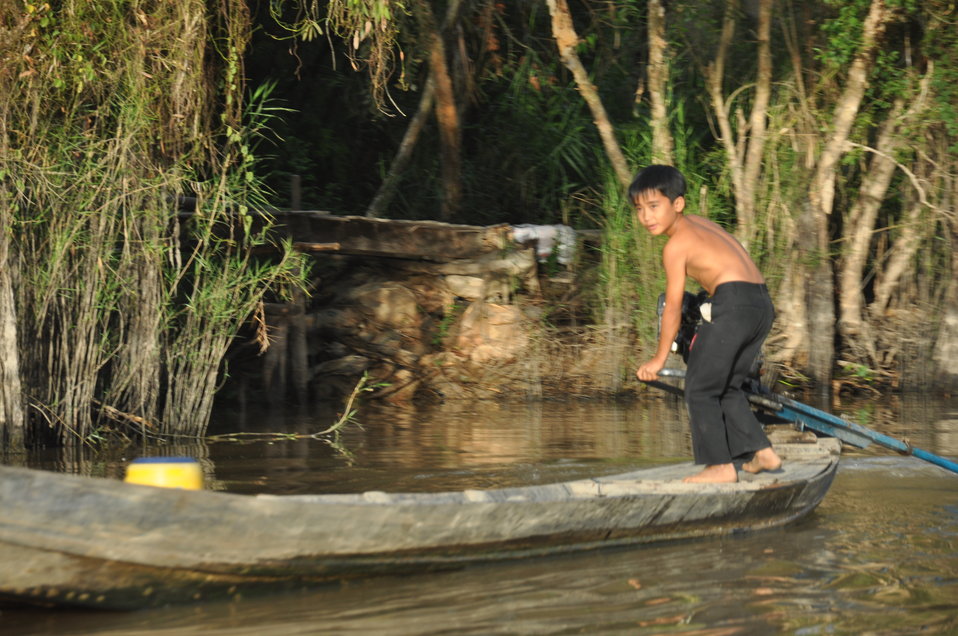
USAID supplies assistance to flood-stricken Long An Province, Tan Thanh District

USAID site visit to Long An Province to visit flood relief beneficiaries